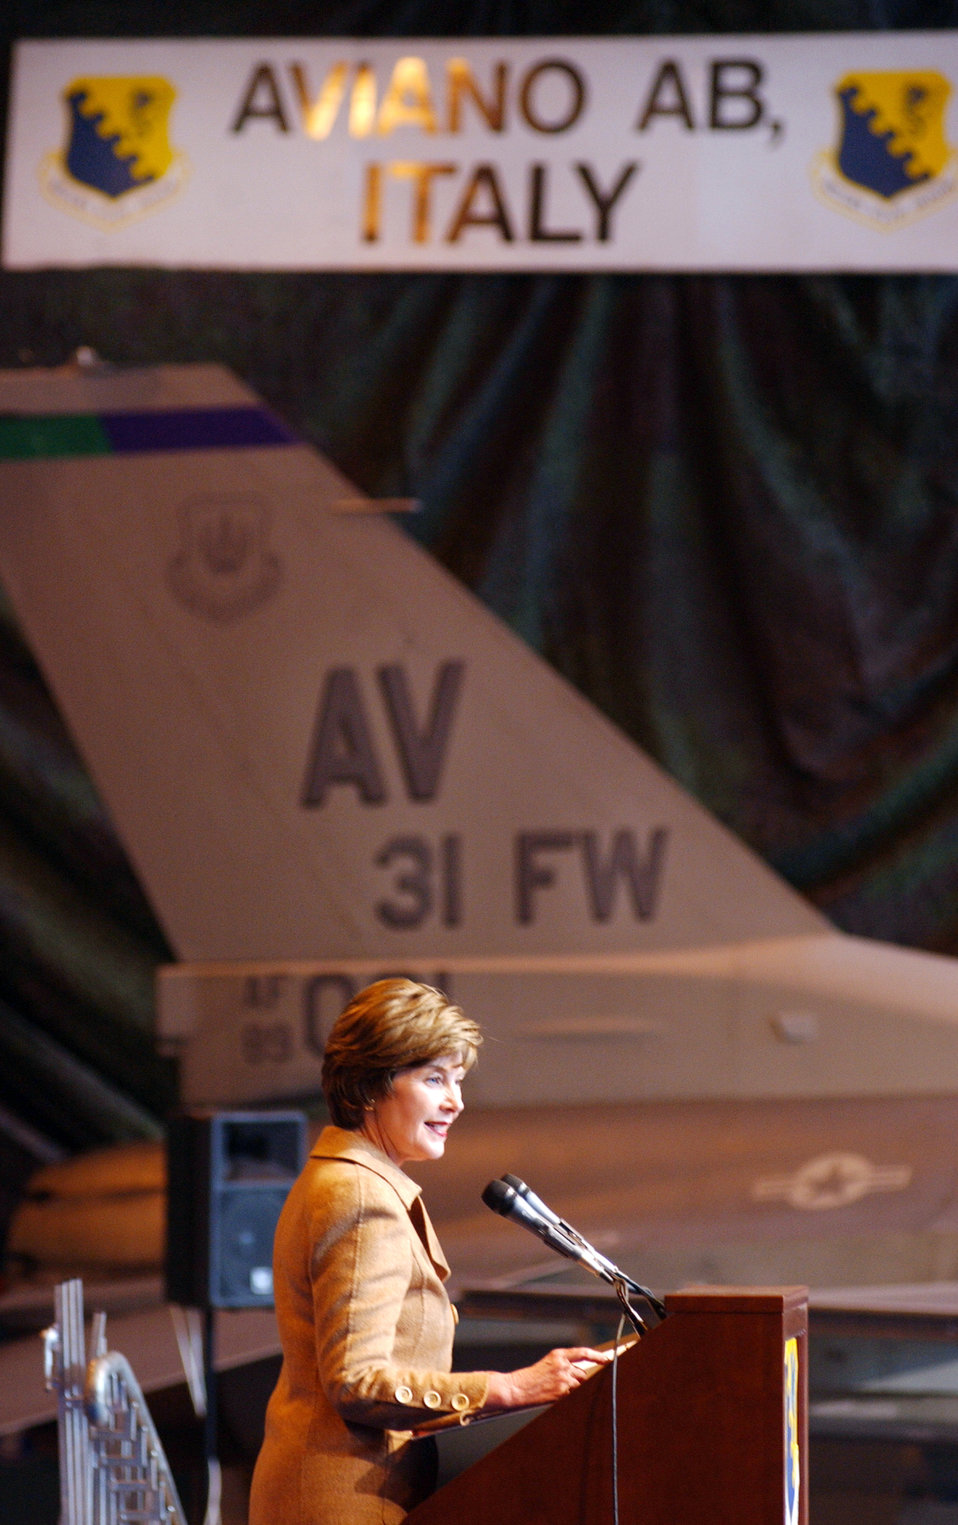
First lady visits Aviano

AVIANO AIR BASE, Italy (AFPN) -- First Lady Laura Bush speaks here Feb. 10. Mrs. Bush thanked the Airman here for their sacrifices and efforts in supporting the war on terror. The first lady was on her way to the Olympics in Turin.